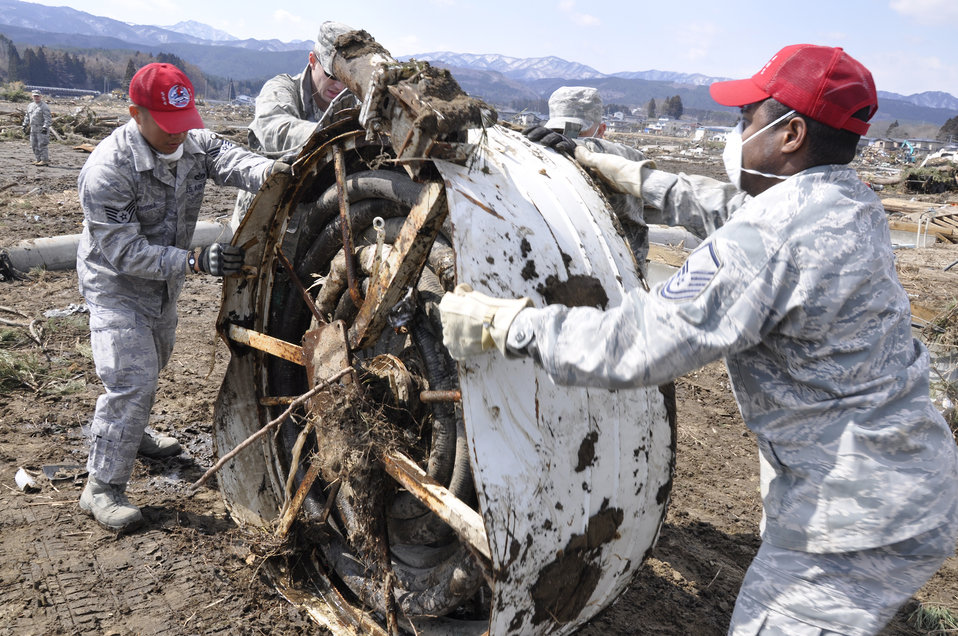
Airmen help with tsunami cleanup

Airmen rotate a water treatment system across a tsunami-struck area March 29, 2011, in Noda Mura, Japan.